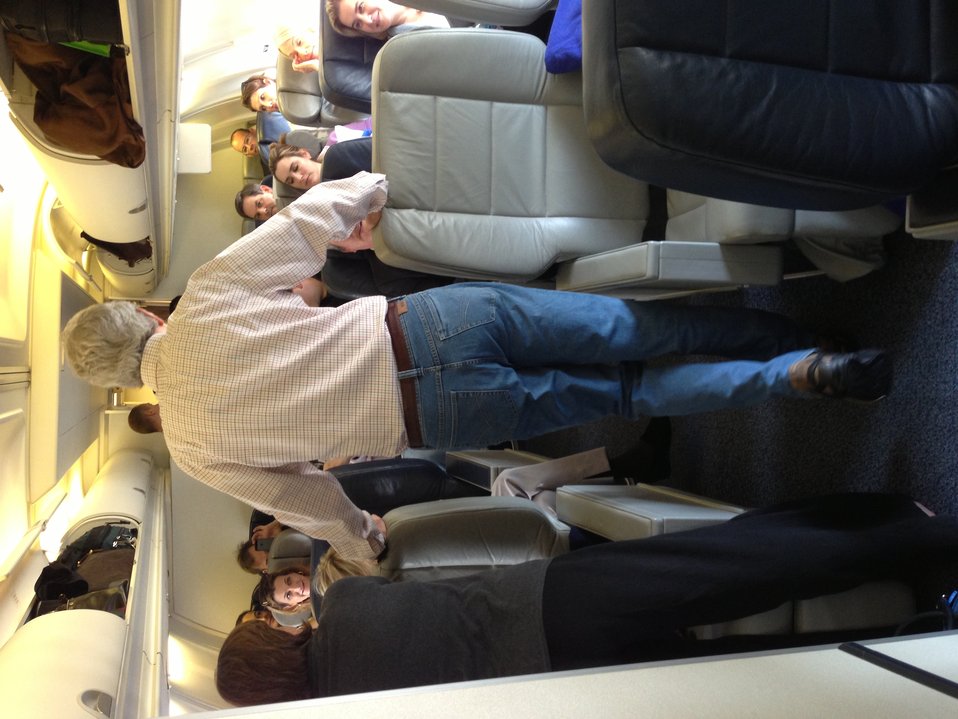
Secretary Kerry Speaks With Reporters

U.S. Secretary of State John Kerry speaks with reporters shortly after his plane takes off from Doha, Qatar, en route home after an 11-day trip on March 6, 2013.